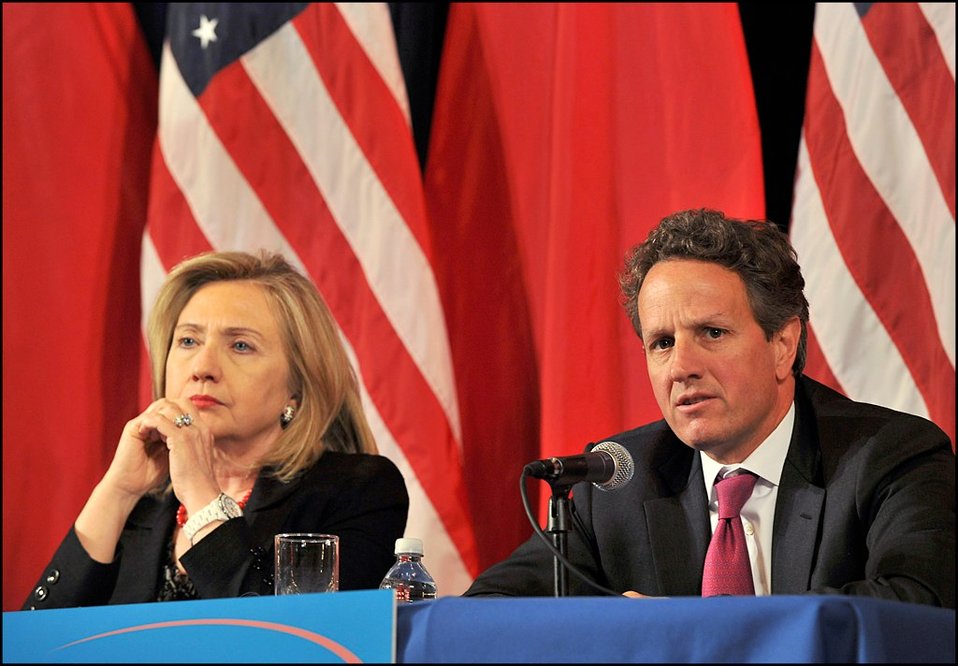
U.S.-China Strategic and Economic Dialogue concluded on Tuesday with statements from Secretary Clinton, Secretary Geithner and their counterparts.